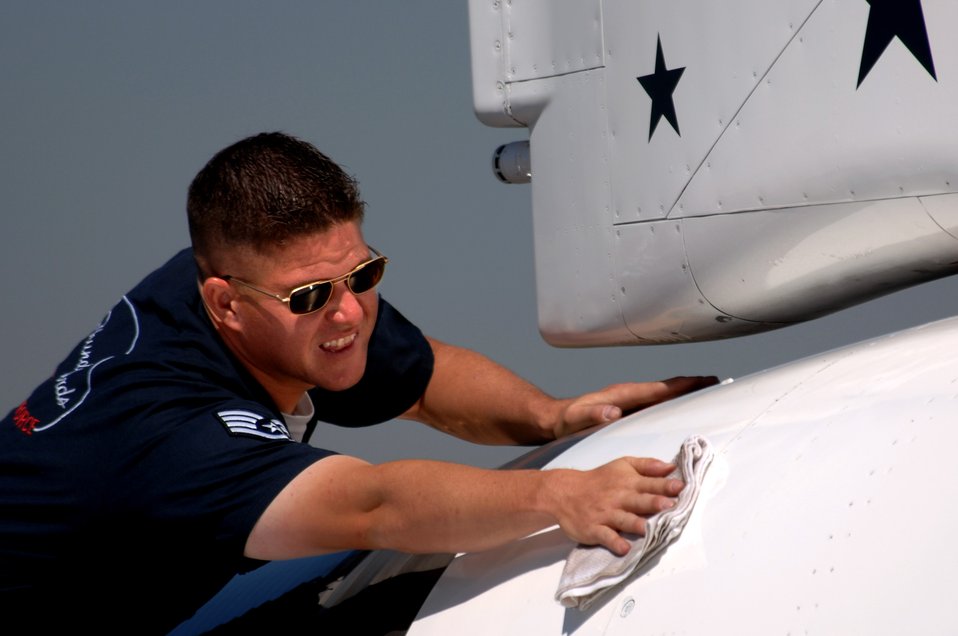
T-Birds getting ready for the airshow

Staff Sgt. Steve Wyatt, a crew chief with the Air Force Thunderbirds, touches up one of the jets March 30 prior to a Thunderbird practice show at Naval Base Ventura County, Point Mugu, Calif.